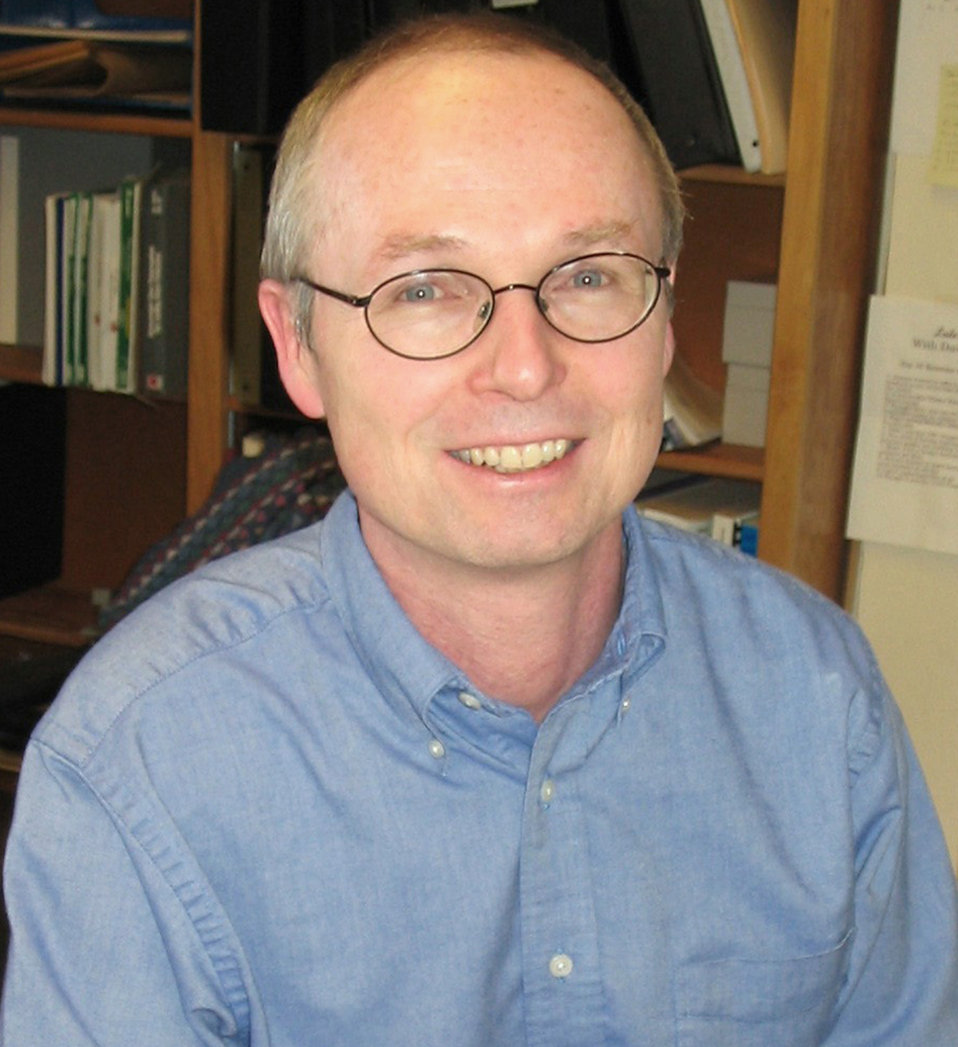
Dr. David Nesbitt